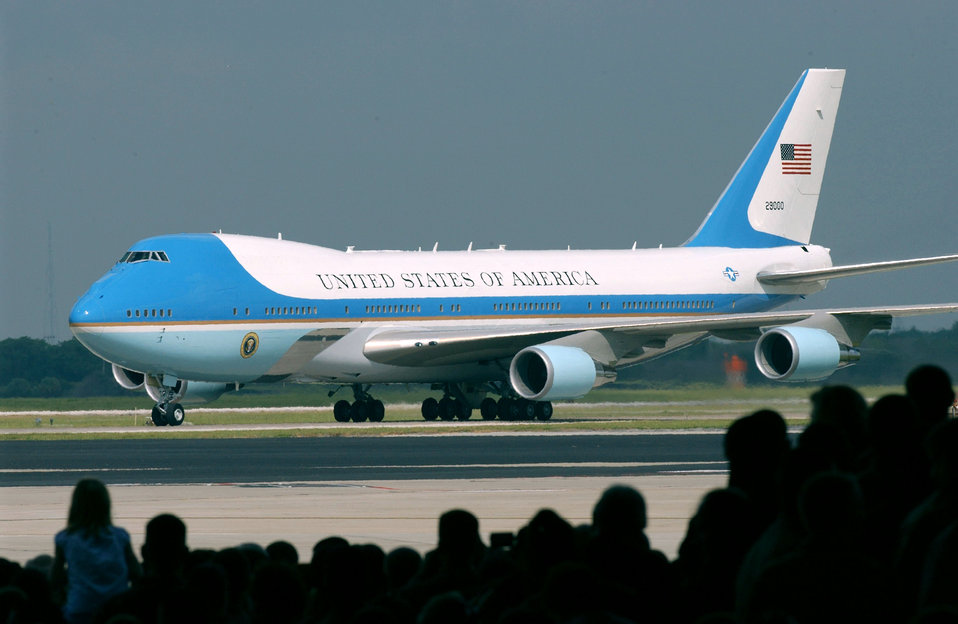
President Bush visits MacDill AFB

MACDILL AIR FORCE BASE, Fla. -- Air Force One carrying President George W. Bush taxies on the flightline here June 16. The president delivered a speech that was broadcast live to servicemembers worldwide. He said with the transfer of sovereignty two weeks away, the future of a free Iraq is coming into view.